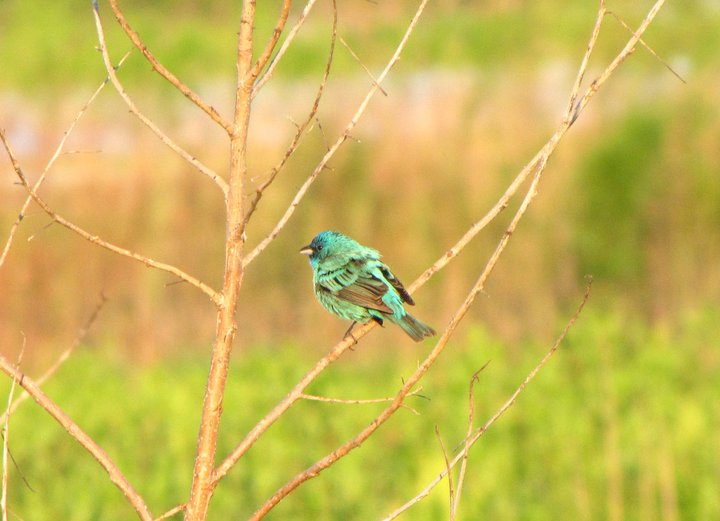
indigo bunting at sunrise

Port Louisa National Wildlife Refuge